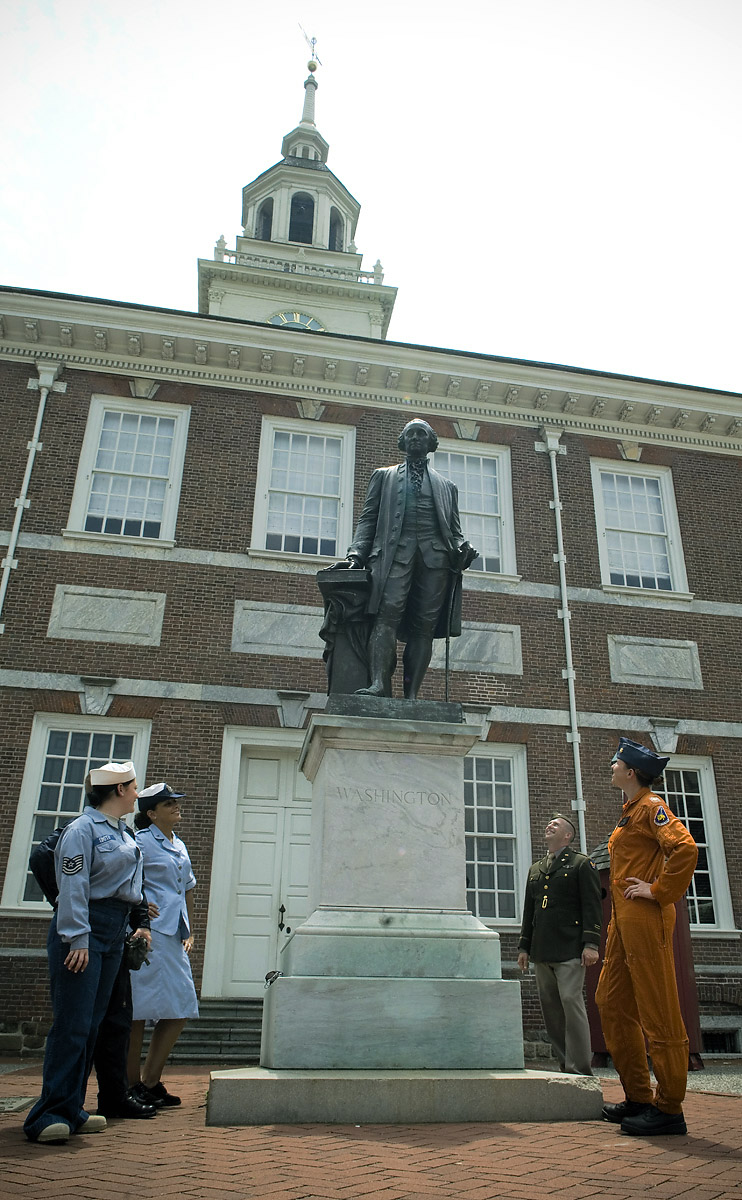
Airmen trace roots of independence during Air Force Week in Philadelphia

Parade of Uniform members, wearing various vintage Air Force uniforms; take a closer look at the George Washington monument in front of Independence Hall during Air Force Day at Independence Hall in Philadelphia, May 27, in conjunction with Air Force Week - Philadelphia. The Parade of Uniforms exhibit is the largest private collection of vintage Air Force uniforms owned and showcased by Tech. Sgt. Jack Waide stationed at Elmendorf Air Force Base, Alaska. The week is designed to broaden awareness of the U.S. Air Force's role in the war on terrorism and strengthen support for Airmen serving worldwide in defense of freedom.